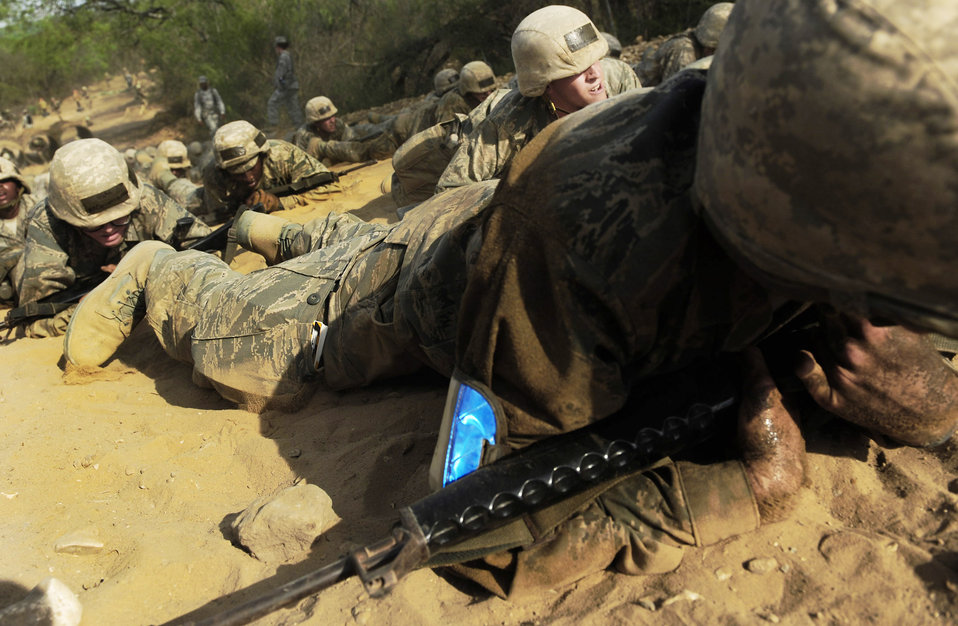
Trainees conquer the BEAST

Basic trainees inch their way through a tactical course at the Basic Expeditionary Airman Training, or BEAST, course Sept. 2, 2009, at Lackland Air Force Base, Texas. The BEAST introduces Airmen to the joint expeditionary concept and immerses them in deployment scenarios.